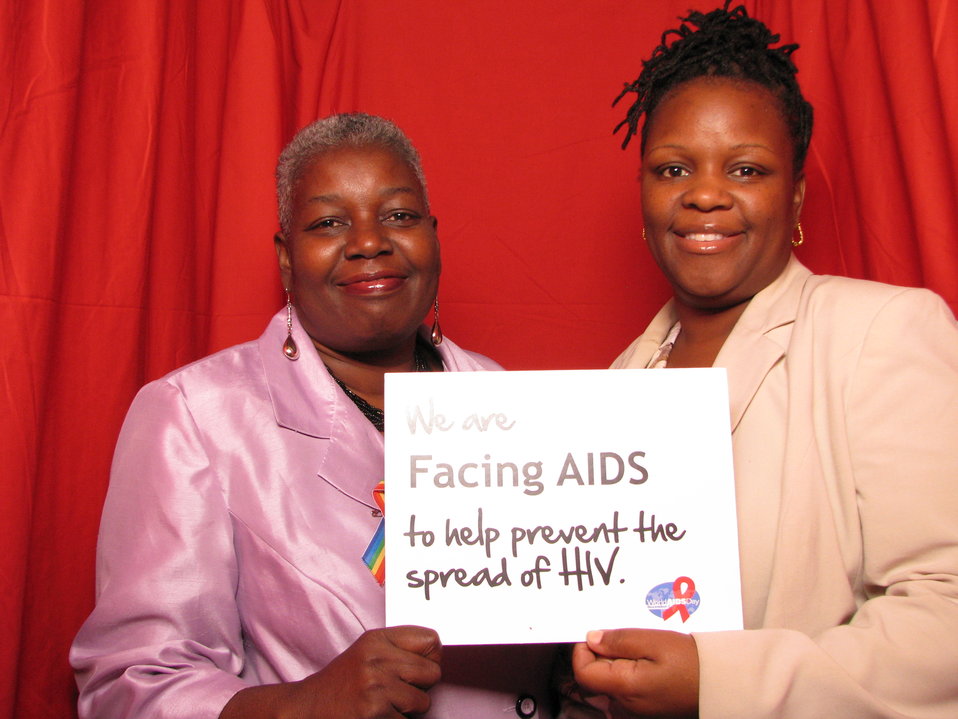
We're FACING AIDS to help prevent the spread of HIV.

From the AIDS.gov photo booth at the U.S. Conference on AIDS, September 2010 (Orlando, FL).